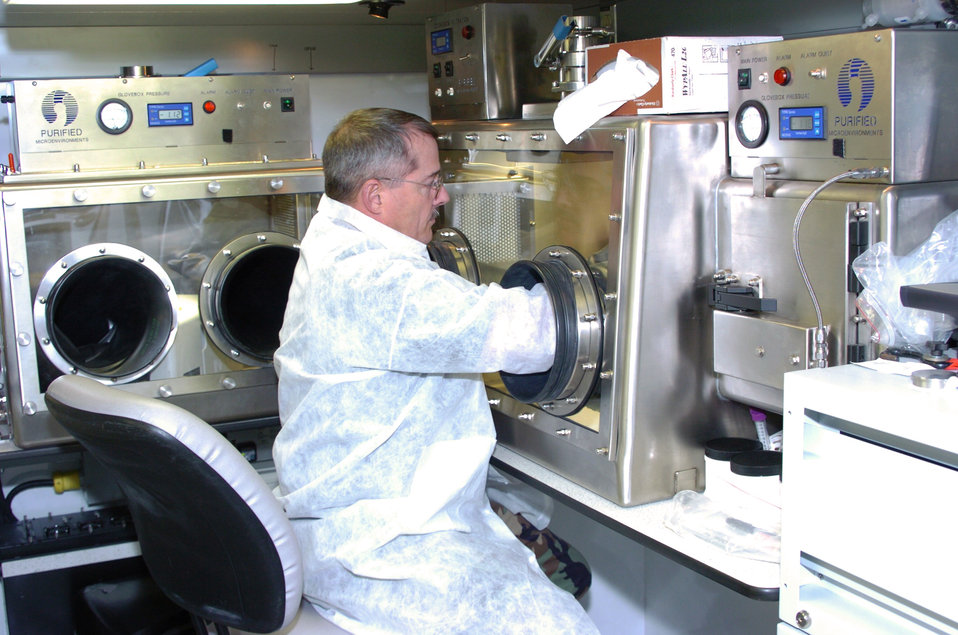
Guard civil support teams provide WMD expertise to communities

STONE COUNTY, Ark. -- Army Sgt. 1st Class Barry Witherow tests a sample during an exercise here. In the event of an attack or incident involving chemical, biological or radiological agents, nuclear hazards or high-yield explosives, guardsmen with the 61st Weapons of Mass Destruction Civil Support Team in Arkansas respond to, advise and assist local and regional authorities.